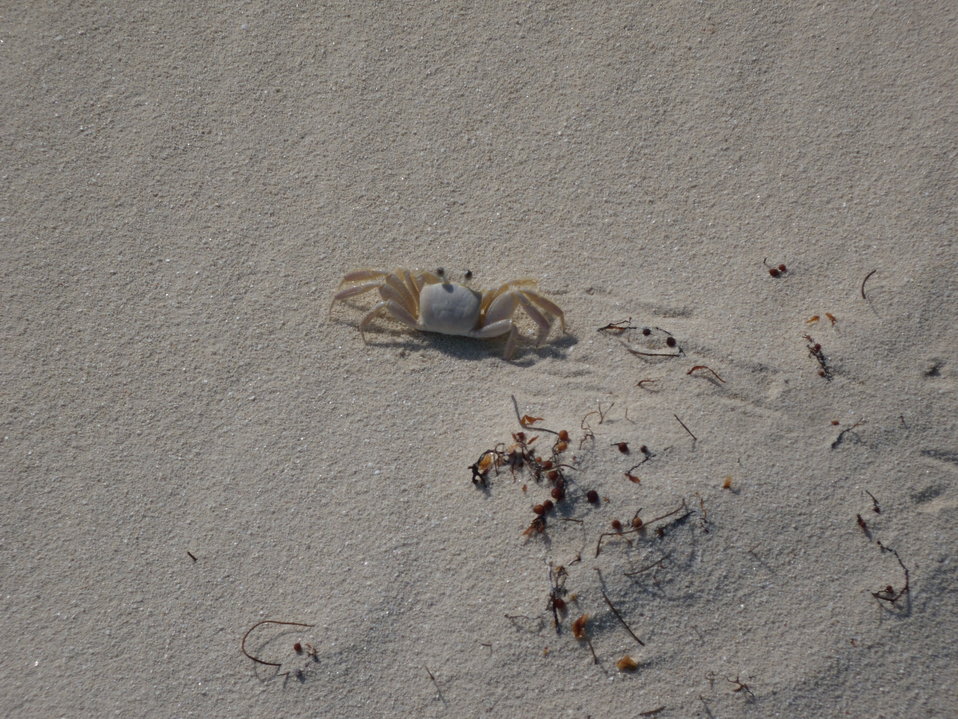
Ghost crab on Berry Island

Ghost crabs burrow into sandy areas. On shorebird breeding grounds, ghost crabs are documented shorebird chick predators.